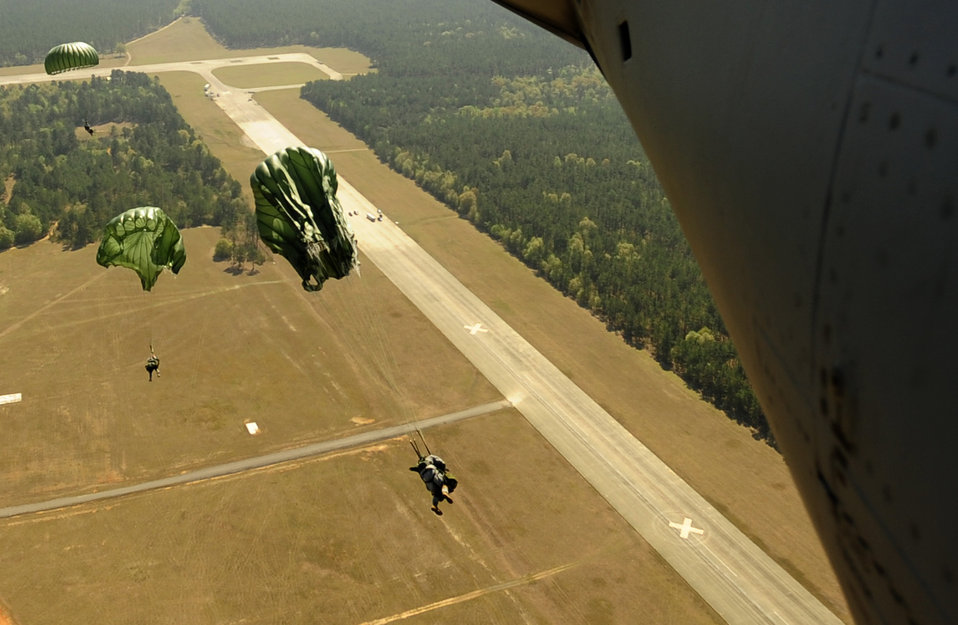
Charleston loadmasters prepare for training mission

Airmen spot their drop zone after jumping from a C-17 Globemaster III during a local static-line jump training mission over North Field near Charleston Air Force Base, S.C., April 5, 2010. The Airmen are assigned to the 820th Security Forces Group at Moody AFB, Ga., and are training with the 317th Air Reserve Squadron from Charleston.